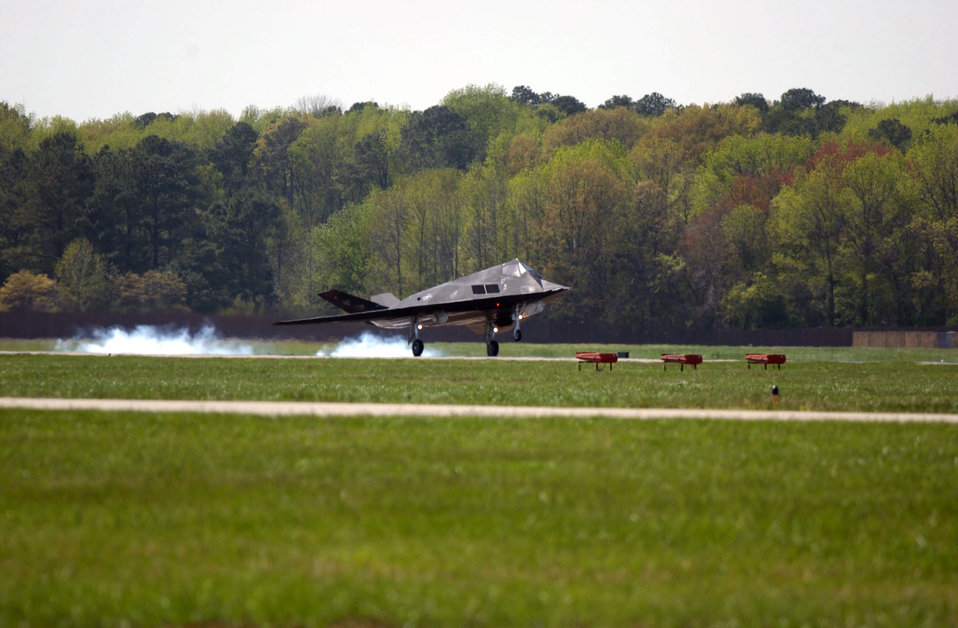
Nighthawk touchdown

LANGLEY AIR FORCE BASE, Va. -- Six F-117A Nighthawk stealth fighters from Holloman Air Force Base, N.M., landed at Langley Air Force Base, Va., on there way back to their home base, April 14, 2003. The F-117s deployed on the 3rd of February with about 300 support personnel. All personnel are expected to return by the end of the month. The F-117s played a critical role in the first night of bombing, dropping four EGBU-27s on a high priority target. Two F-117s each unleashed two EGBU-27s on a structure in Baghdad on March 20th where Saddam Hussein was believed to be.